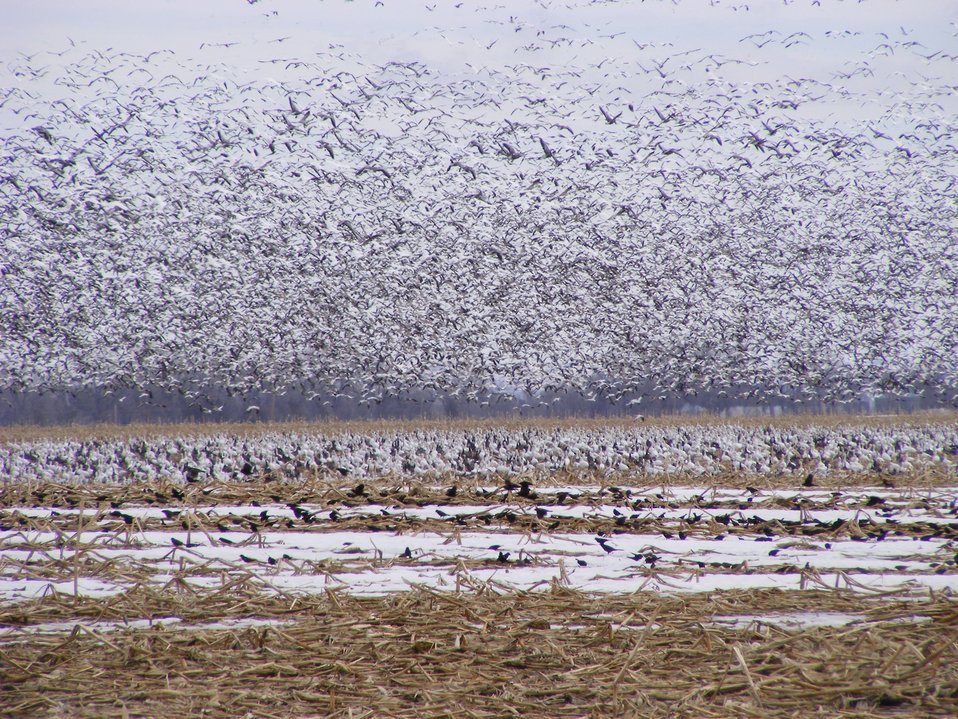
Too many to count

Snow geese and white- fronted geese over South Dakota cornfield in spring. Laura Hubers/USFWS